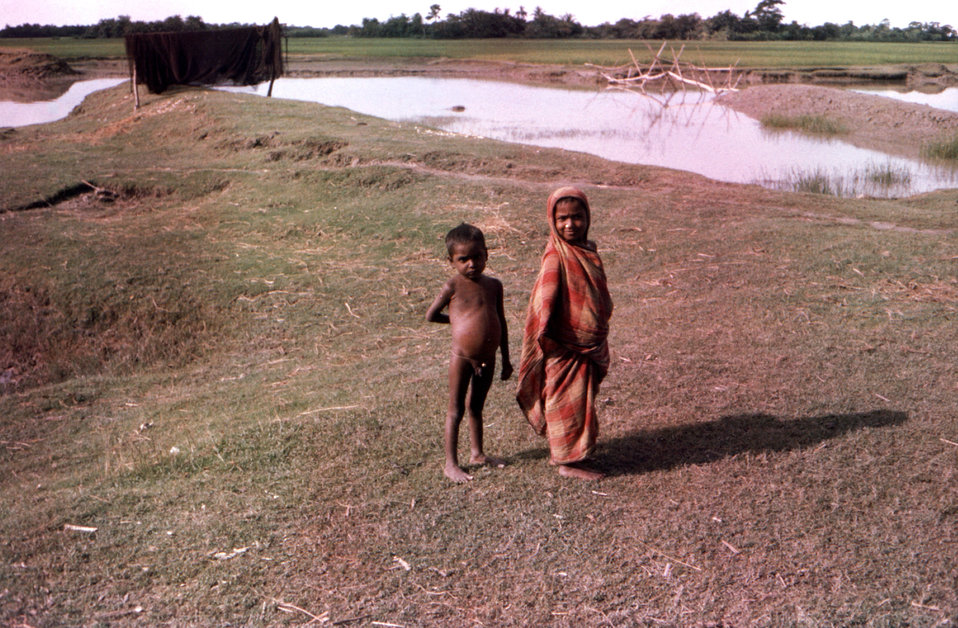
This September, 1975 photograph, captured these two young children as they were wandering nearby the 'Lord Harding Bazaar', which was the location of a 1975 smallpox outbreak. Note that in the background, there was a typical bamboo bridge.